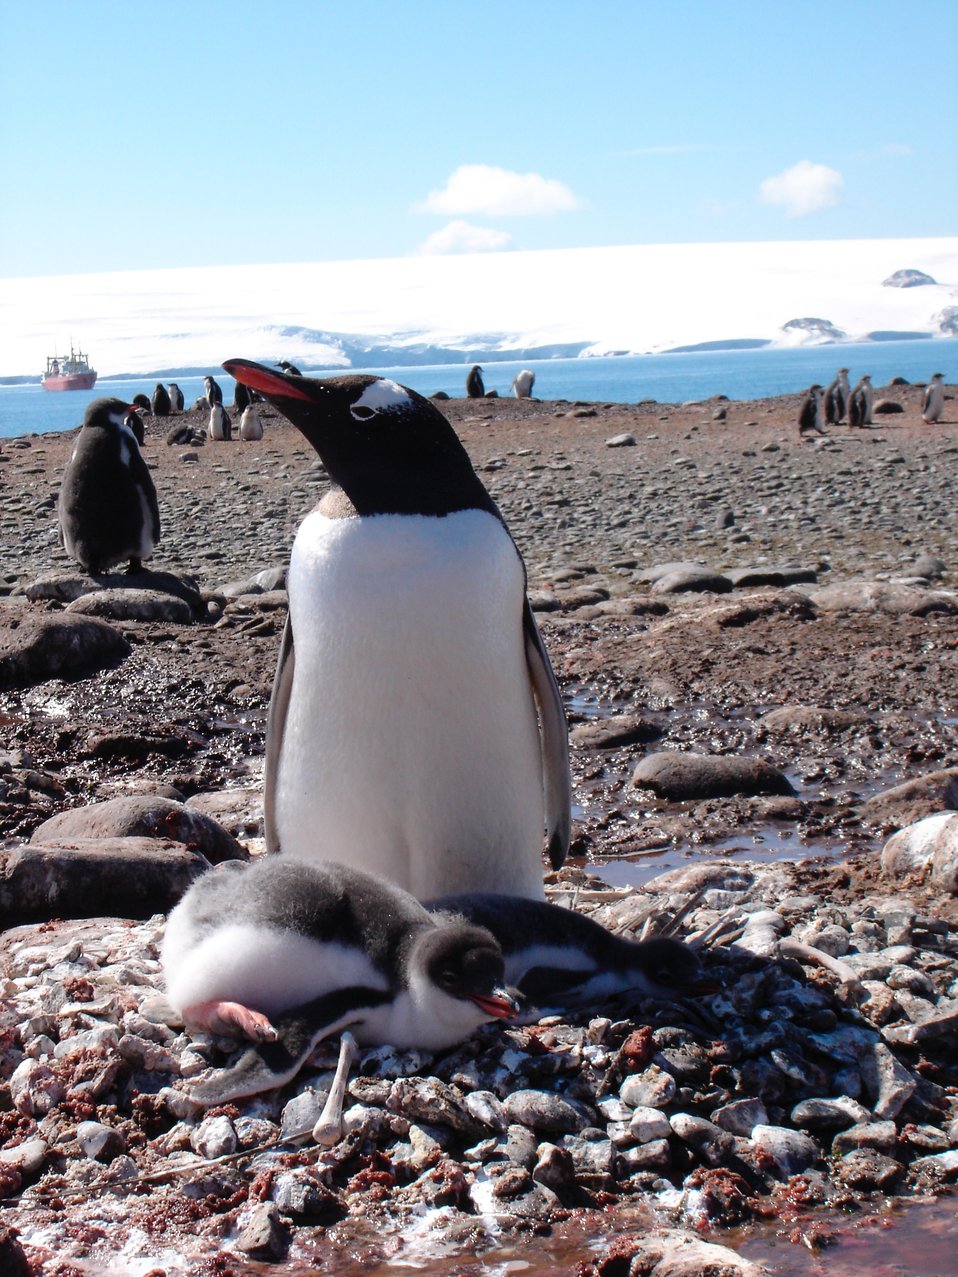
Gentoo penguin with chick